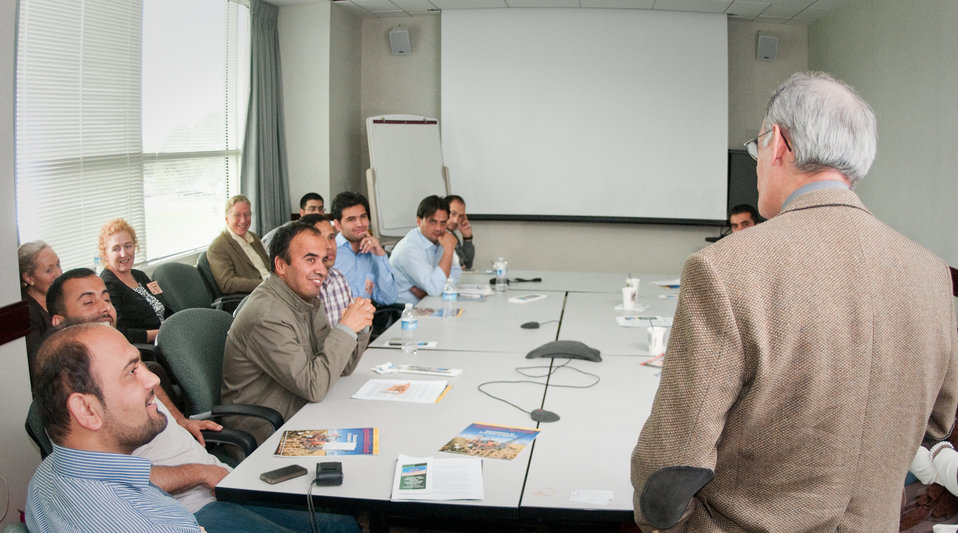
U.S. Department of Agriculture (USDA), Agriculture Research Service's (ARS) Rob Griesbach (r.), spoke about ARS Office of Technology Transfer - Getting USDA's ARS Innovations Out to the People, and Into the Economy, during a presentation to the 12 Borlaug Fellows from Afghanistan’s Ministry of Agriculture, Irrigation and Livestock (MAIL), while at the George Washington Carver Center, in Beltsville, MD, on Wednesday, September 21, 2011.